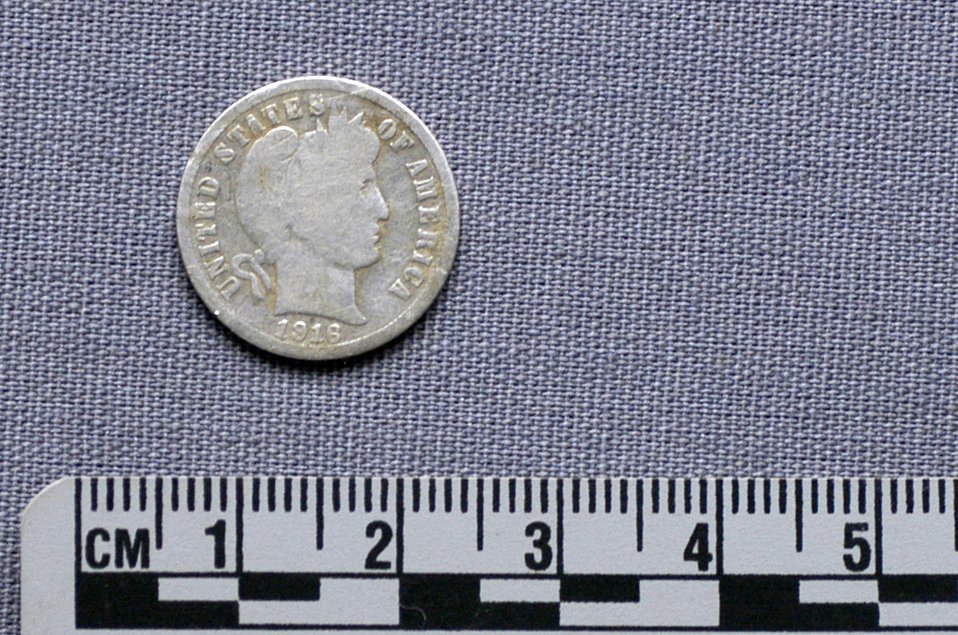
JPAC team returns from Austria

A 1916 silver dime is recovered at the site of a B-17 bomber crash near Vostenhof, Austria, on Aug. 7. The dime is significant because the pilot, 1st Lt. Stanley Dwyer, was born in 1916 and it is believed by his family that he may have been carrying the dime as a good luck charm on the day of the crash. An 18-member JPAC team, including a forensic anthropologist, explosive ordnance disposal technician and field medic, from Hickam Air Force Base, Hawaii, returned Oct. 1 after 45 days in Austria attempting to recover the remains of 1st Lt. Stanley Dwyer and gunner Sgt. John Boros who were lost in the crash May 10, 1944. The mission of JPAC is to achieve the fullest possible accounting of all Americans missing as a result of the nation's past conflicts.